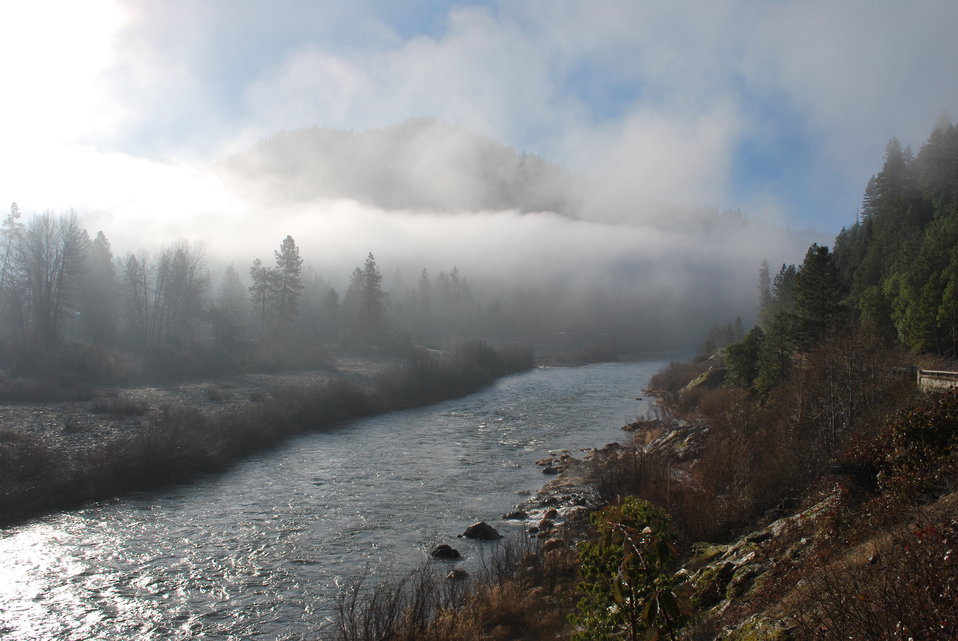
The Klamath River in winter near Happy Camp, California, also known as the Steelhead Capital of the world.